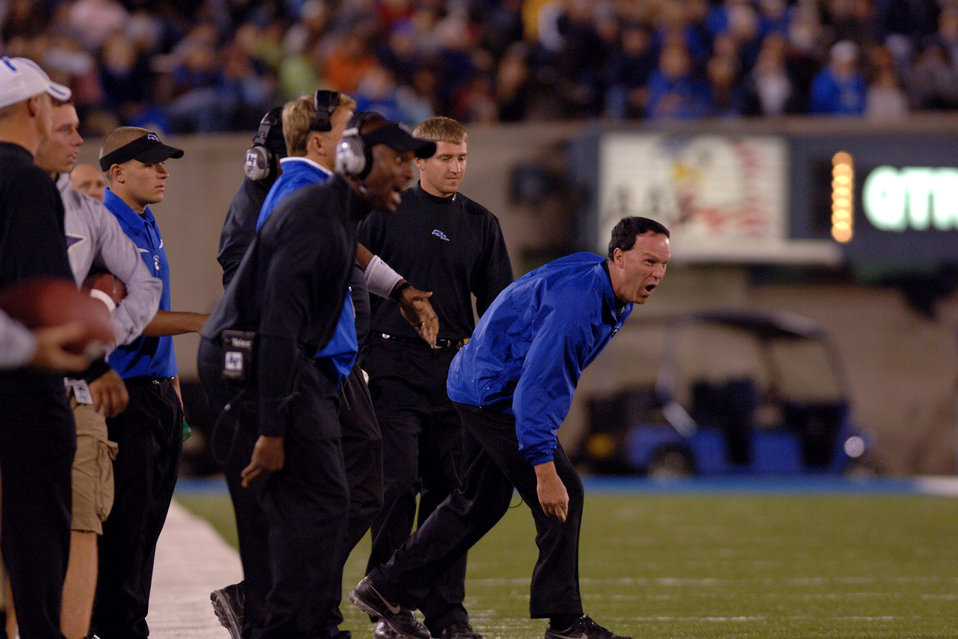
Falcons back on winning track, 31-14

Air Force head coach Troy Calhoun emphasizes a point from the sideline during the Falcons 31-14 victory over UNLV Oct. 6 at Falcon Stadium. The first-year coach has guided the bluesuiters to 4-2 overall and 3-1 Mountain West Conference records in 2007.